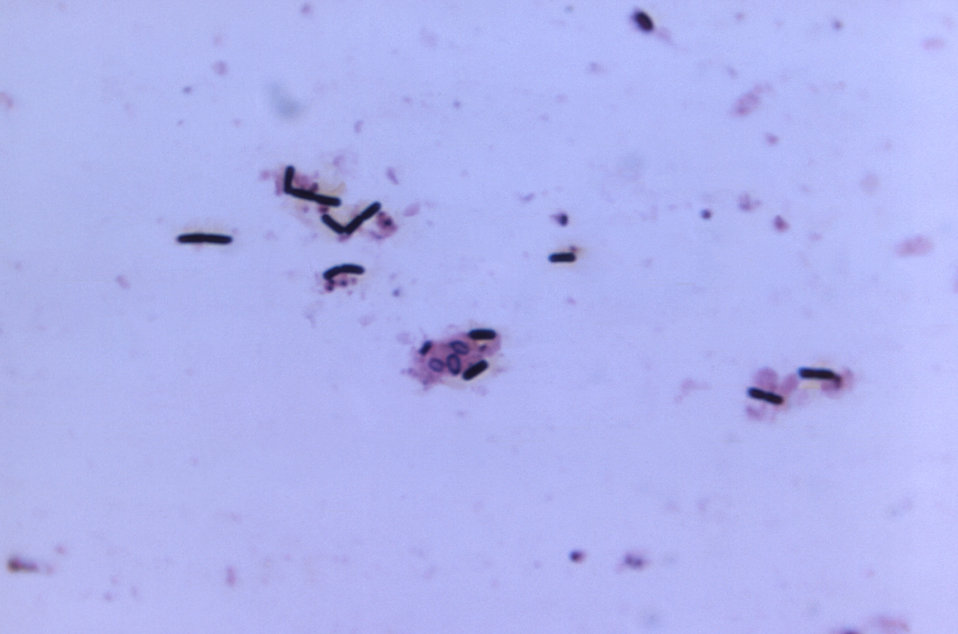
Magnified 956X, this Gram-stained photomicrograph depicts numbers of Clostridium sp. Gram-positive bacteria, which had been grown on a chopped meat medium, for a time period of 48 hours.